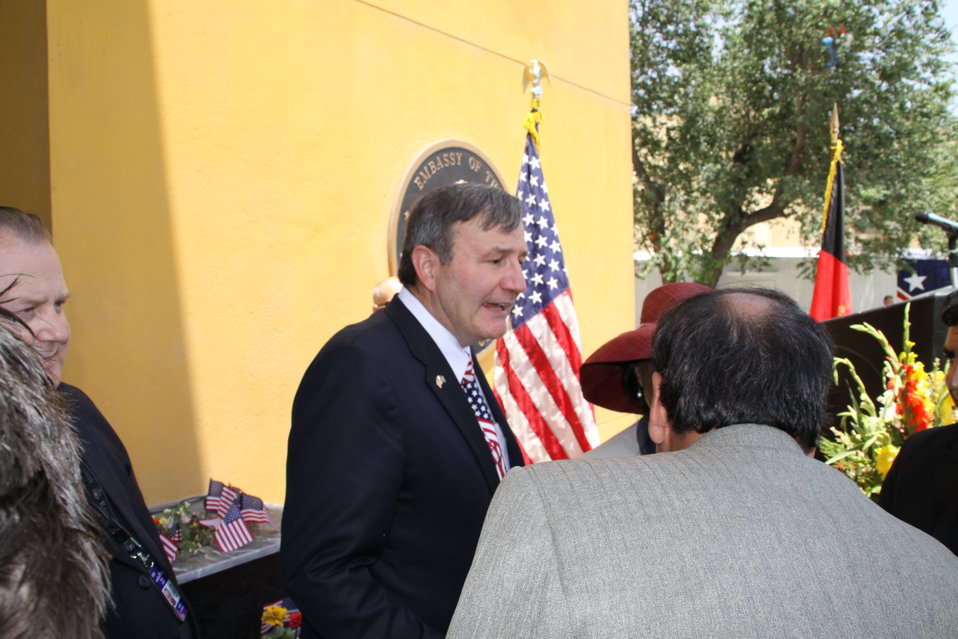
Kabul Official July 4th Celebration